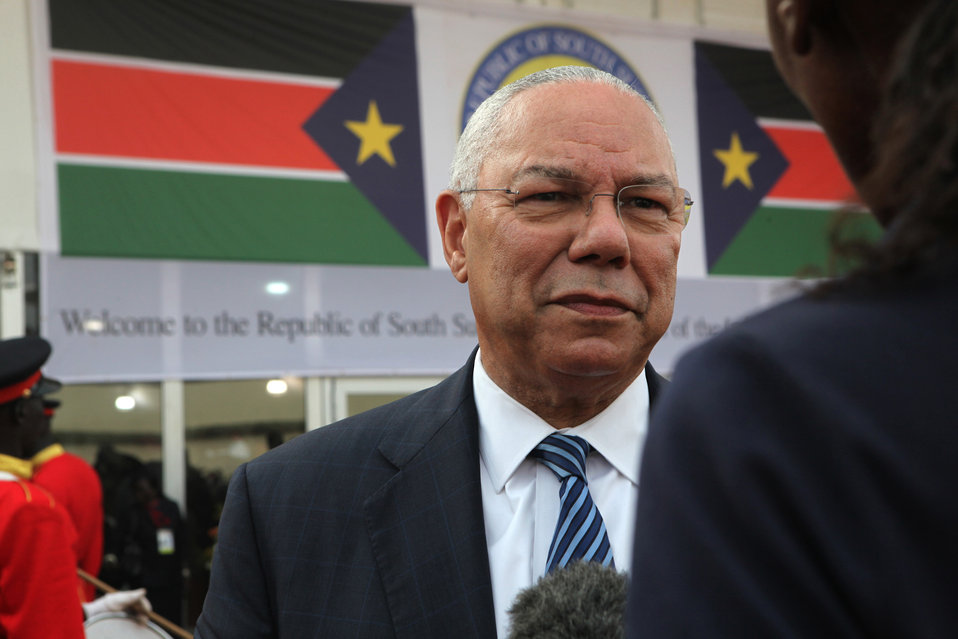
South Sudan Independence Day

Ret. General Colin Powell, former Secretary of State, speaks to CNN International during the Republic of South Sudan Independence Day celebrations in Juba, South Sudan on July 9 2011.